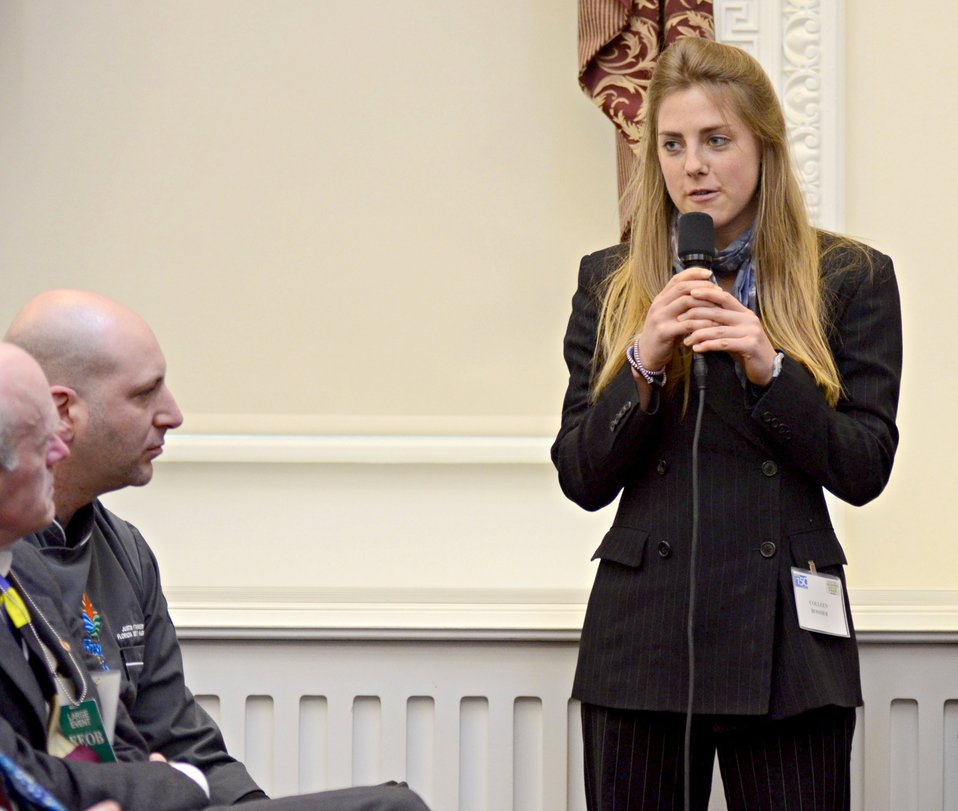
Agriculture Office of the Chief Scientist Program Assistant Colleen Rossier was asked by Agriculture Deputy Secretary Kathleen Merrigan to speak during a Know Your Farmer Compass event that used twitter social media to continue the National Conversation on Local and Regional Food projects and how they offer economic opportunities to local farmers, ranchers and food entrepreneurs, using the new web-based Know Your Food Compass, the conversation covered many aspects about food, such as infrastructure, stewardship, local meat and poultry, Healthy food access, careers in agriculture and local food knowledge. The virtual conversation took place at the White House, and Twitter was used to expand the conversation worldwide, from Washington, D.C., on Monday, March 5, 2012. Unlike most events where mobile communication devices are asked to be turned off, here it was asked that they remain on allowing people to have social media conversations.